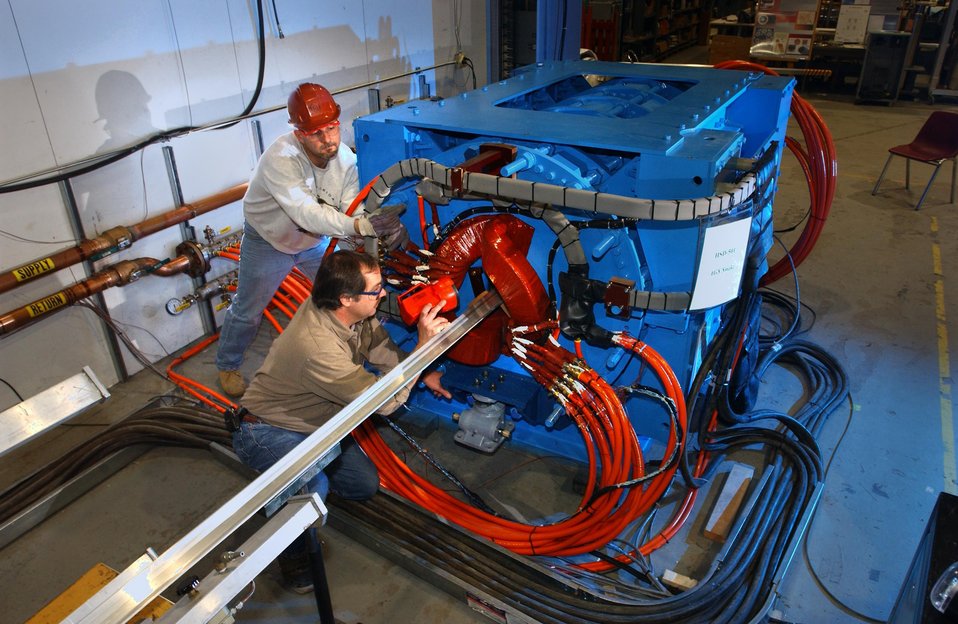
BNL TECHNICIANS EXAMINE A SNAKE MAGNET USED AT THE ALTERNATING GRADIENT SYNCHROTRON.

SINCE 1960 BROOKHAVEN'S ALTERNATING GRADIENT SYNCHROTRON (AGS) HAS BEEN ONE OF THE WORLD'S PREMIER PARTICLE ACCELERATORS. SNAKE MAGNETS ARE USED TO FLIP THE SPIN OF THE PROTONS AS THEY TRAVEL AROUND AN ACCELERATOR TO ELIMINATE DEPOLARIZATION, CALLED 'RESONANCES', WHICH OCCUR DURING ACCELERATION.